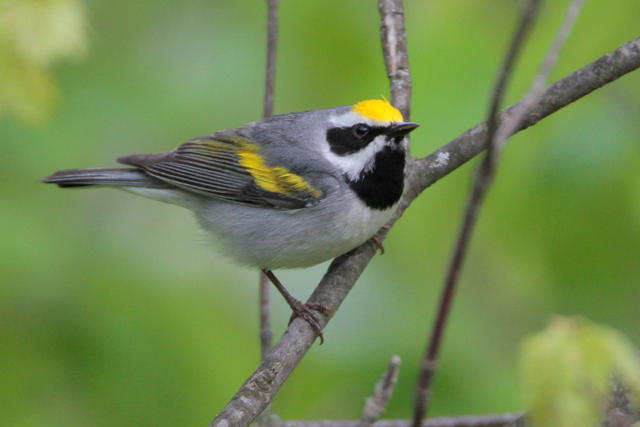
Species7

The golden wing warbler depends on thick, shrubby habitat, and the U.S. Department of Agriculture (USDA) Natural Resource Conservation Service (NRCS) is helping owners and managers of working lands to enhance habitat for them.